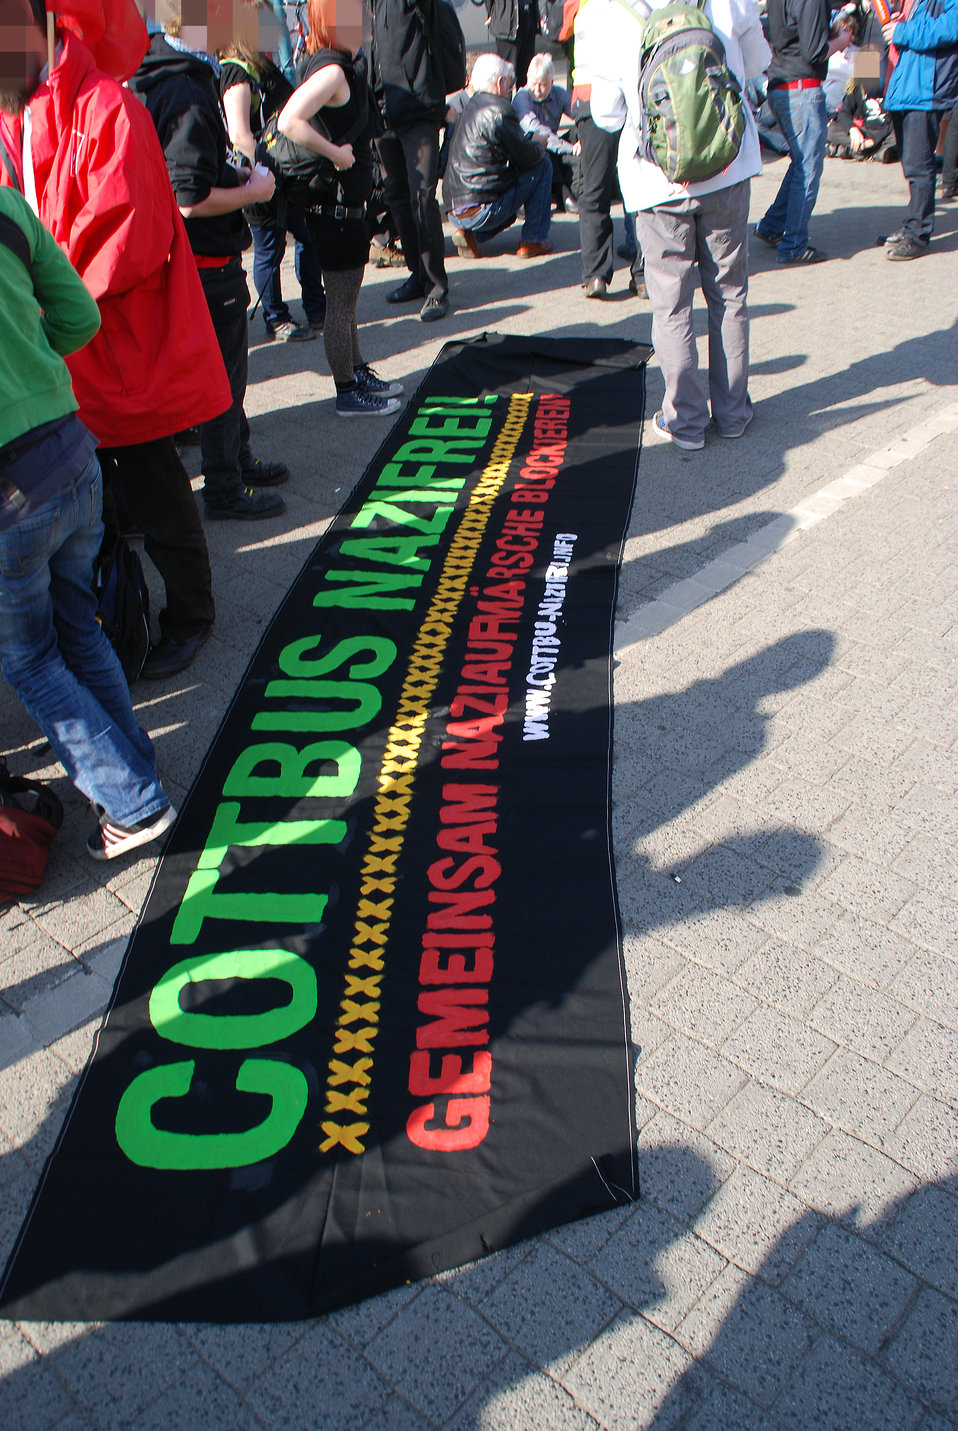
Proteste gegen den Nazi-Aufmarsch am 24.3.2012 in Frankfurt (Oder)